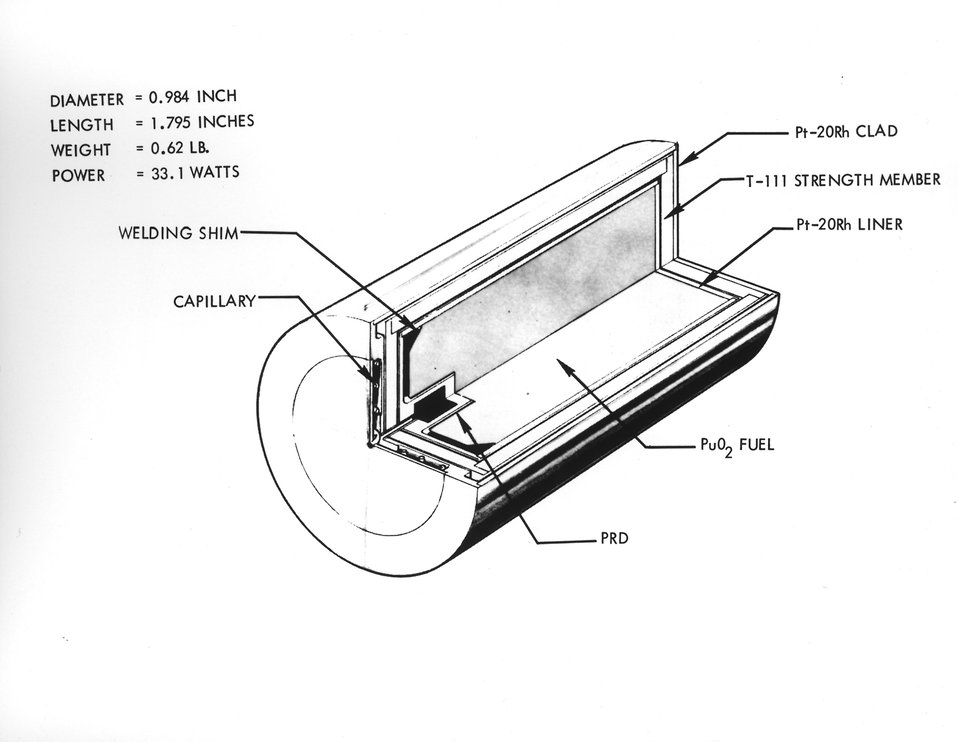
The artificial heart being assessed by the Atomic Energy Commission is powered by a plutonium-238 heat source which has the best isotopic and chemical purity that can be obtained. Circa 1973.